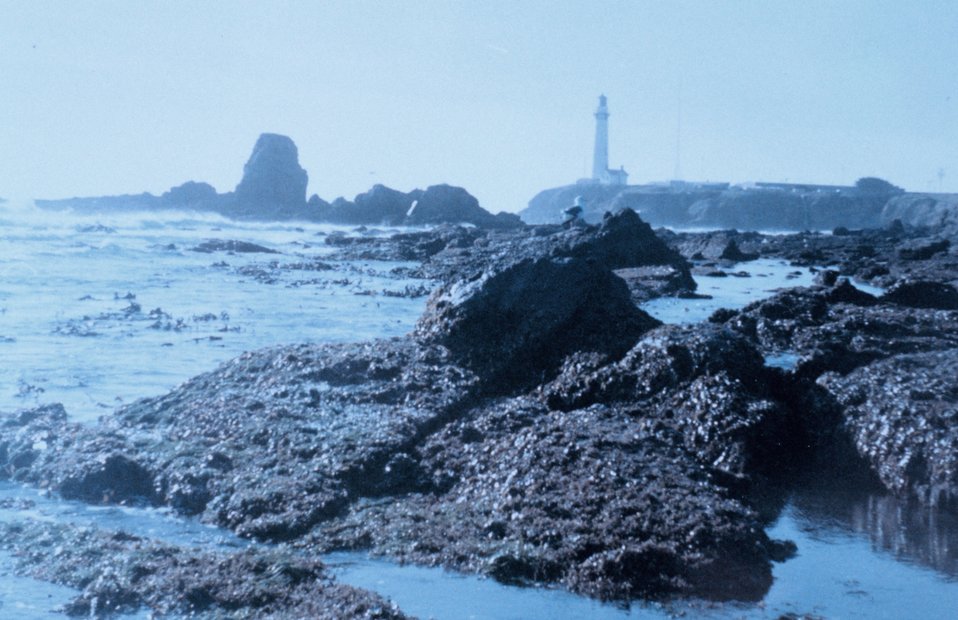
Pigeon Point Lighthouse as seen from the south at low tide on a misty day.